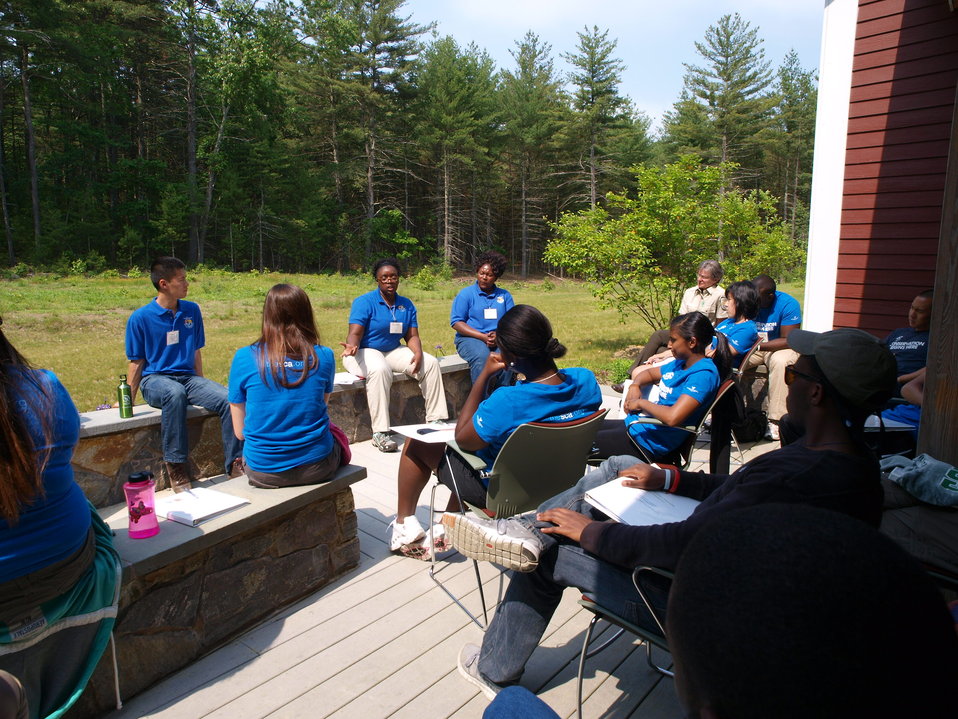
Mentors Talk about Their Journeys

Mao, Chivia and Monica share their stories on how they got involved in the Fish and Wildlife Service.